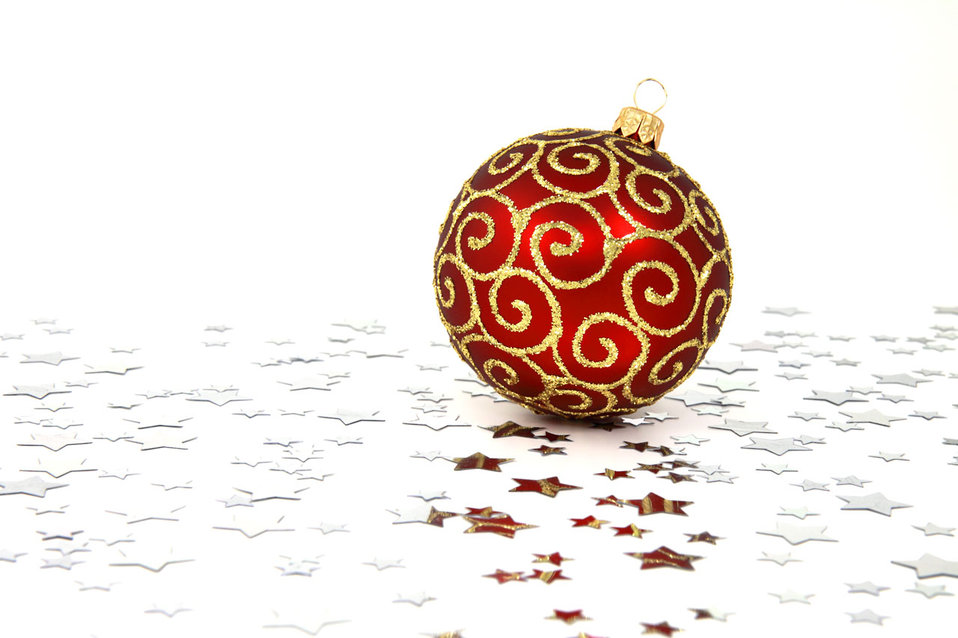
Christmas bauble

A red christmas bauble with silver stars.